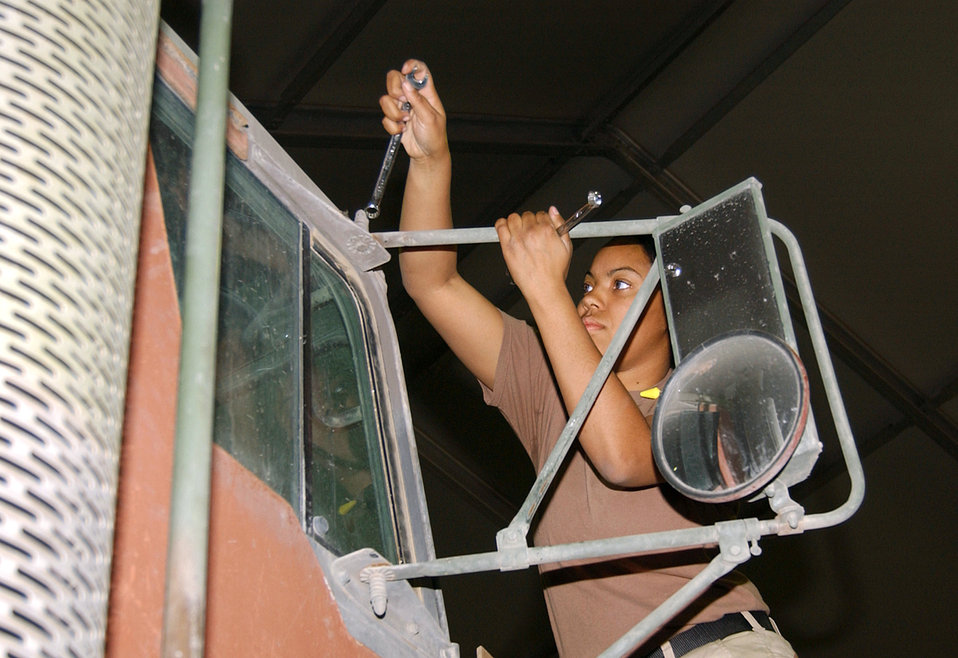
Armor Airmen

BALAD AIR BASE, Iraq (AFPN) -- Senior Airman Keaynna Thomas removes a mirror from a truck. The truck must be stripped before it can receive a level-two armor upgrade. Airman Thomas is with the 732nd Expeditionary Logistics Readiness Squadron.